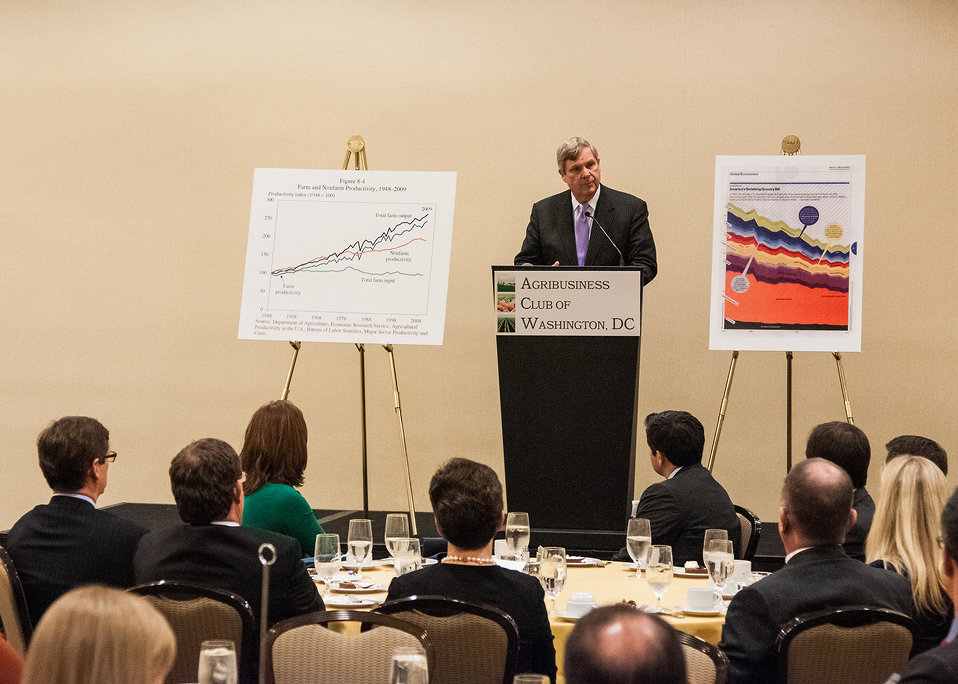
Agriculture Secretary Tom Vilsack spoke to the Agribusiness Club of Washington, D.C. on National Agriculture Day, Tuesday, Mar. 19, 2013. Secretary Vilsack discussed his four cornerstone priorities for the new rural economy – with special focus on building new markets for production agriculture and local/regional marketing of food. The graph to the right of Secretary Vilsack represents the progress in agriculture production form 1948-2009 and the graph to the left represents the progress in the cost of food in the same period.